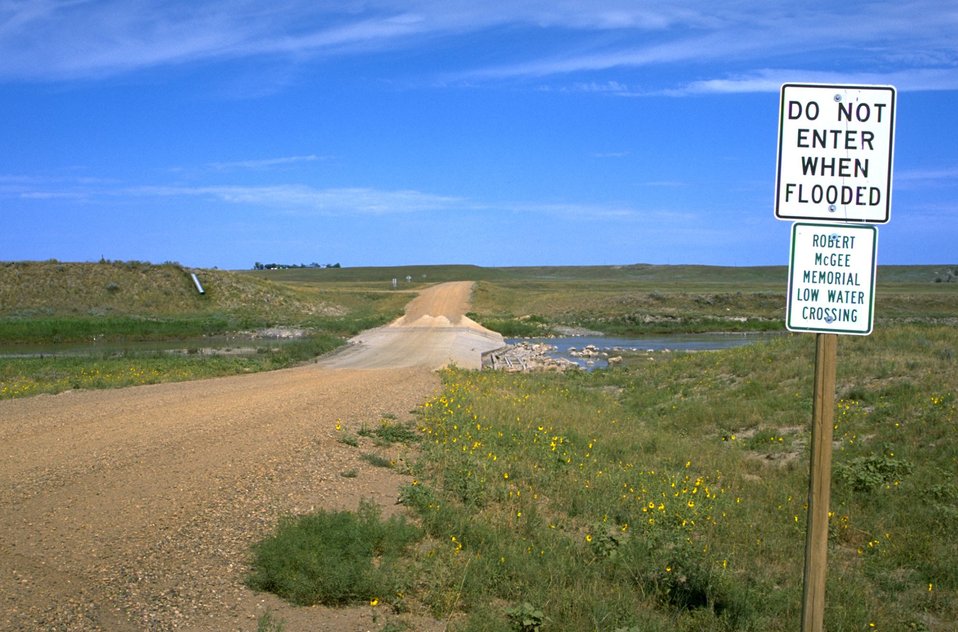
Low water crossing over the Little Missouri River